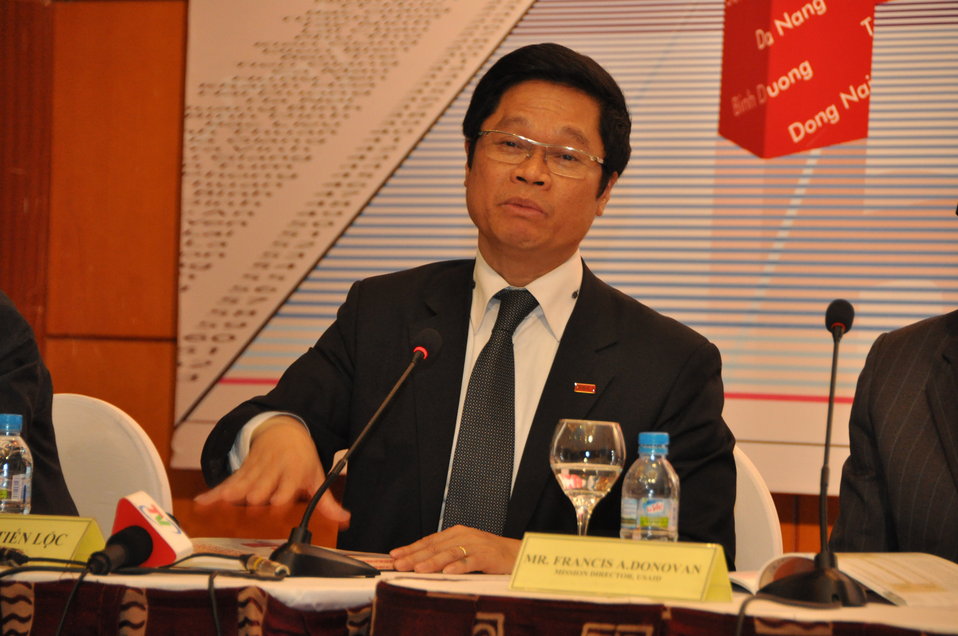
VCCI Chairman Vu Tien Loc at the Provincial Competitiveness Index 2011 Launch